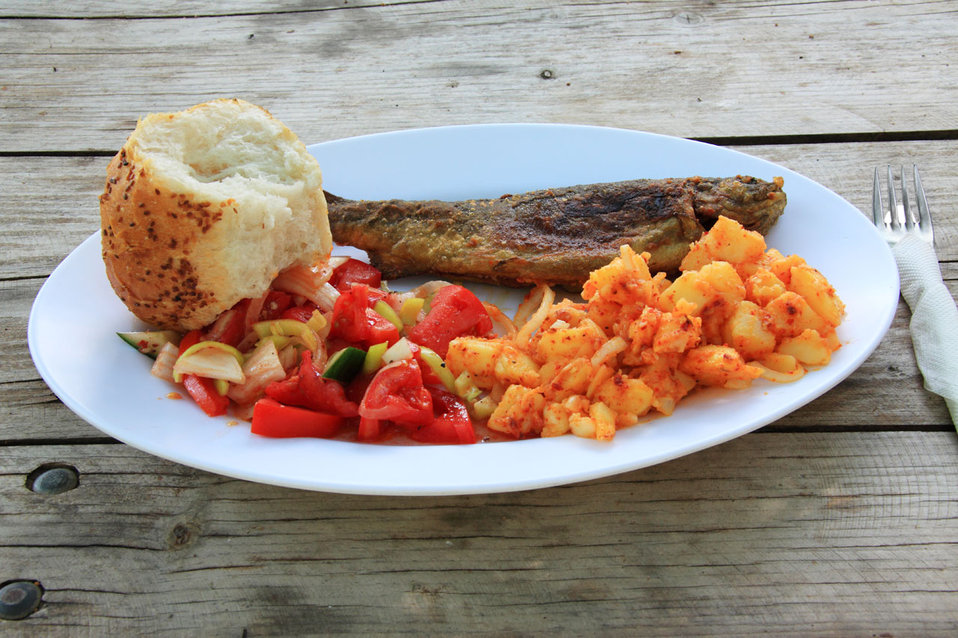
Fried trout with bread, potatoes and vegetable on white plate.